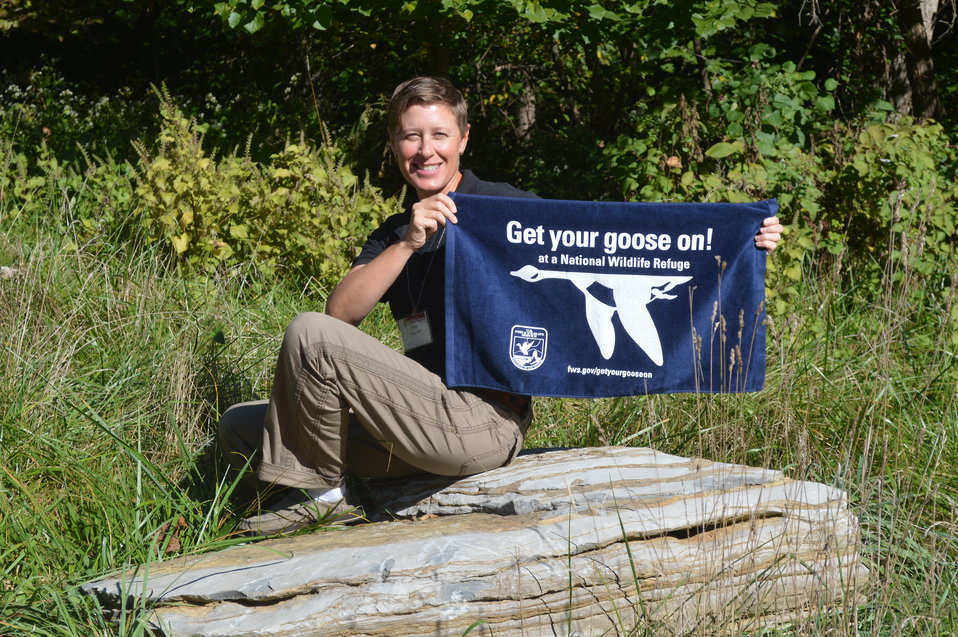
Get Your Goose On!

Photo taken at the National Conservation Training Center in Shepherdstown, WV.

Credit: Ryan Moehring / USFWS

#GetYourGooseOn